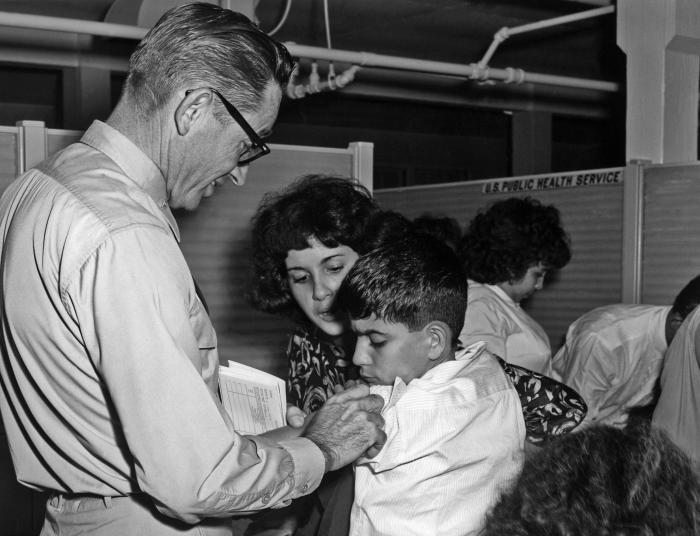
Here, a U.S. Public Health Service representative is shown immunizing a boy in Miami, Florida after his arrival from Cuba during the mass 1965 emigration.